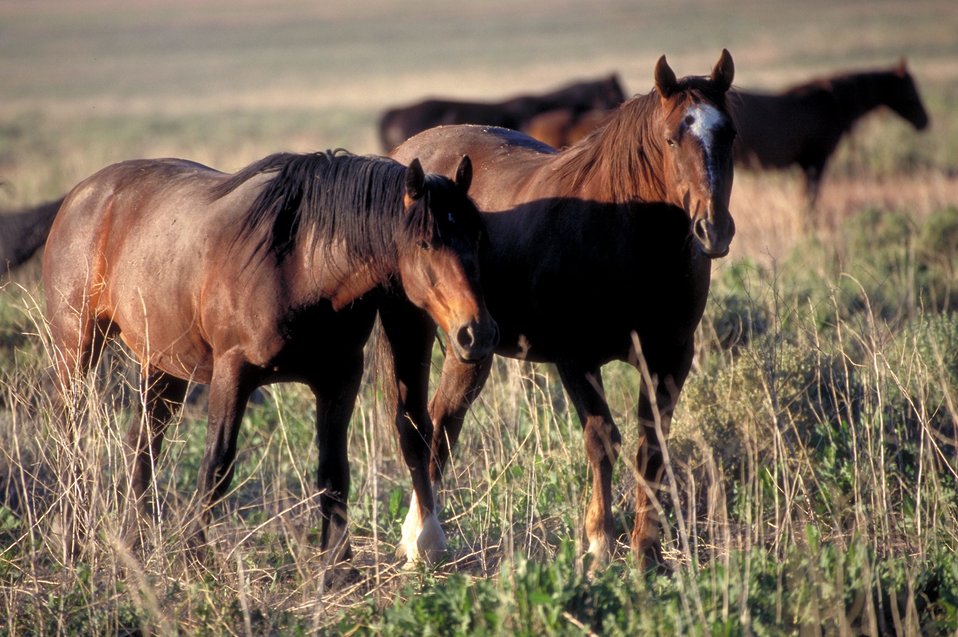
Onaqui Herd near Dugway, Utah.